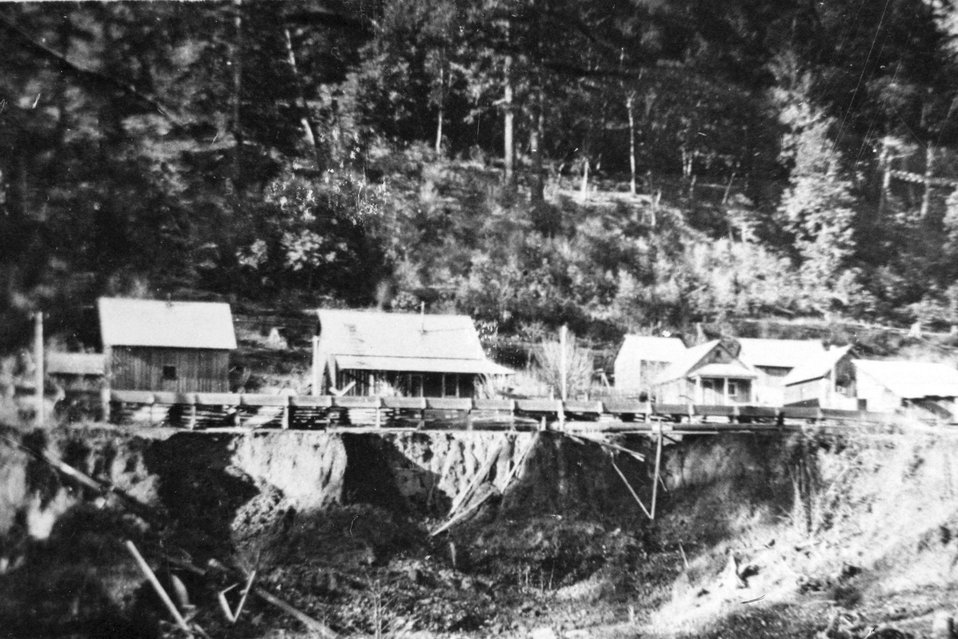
Gold Bar Mine, Illahe.